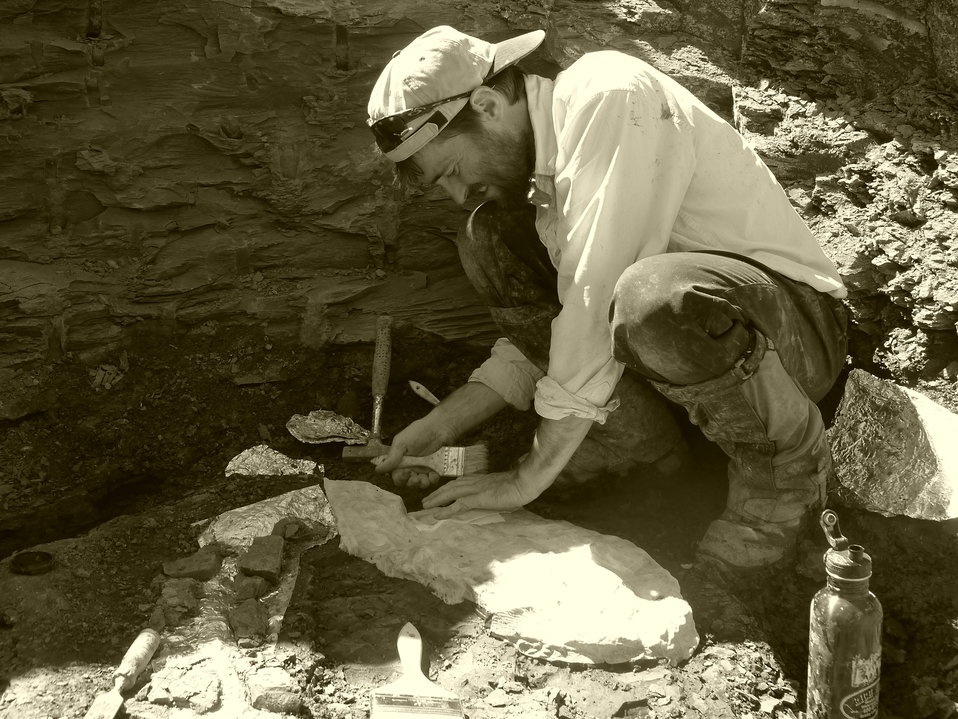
Preparing the Jaw and Skull

Pat Druckenmiller carefully applies sheets of moistened paper towel to the exposed portion of the plesiosaur's jaw and skull. The paper towel provides a bonding surface for the protective coat of plaster that later would be applied.